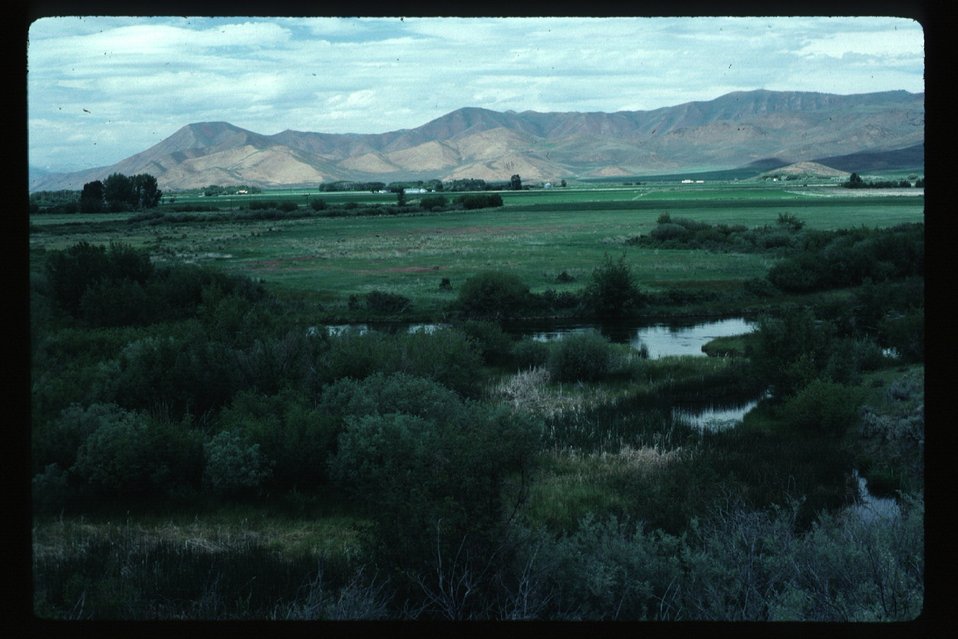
Riparian Shoshone Field Office Silver Creek